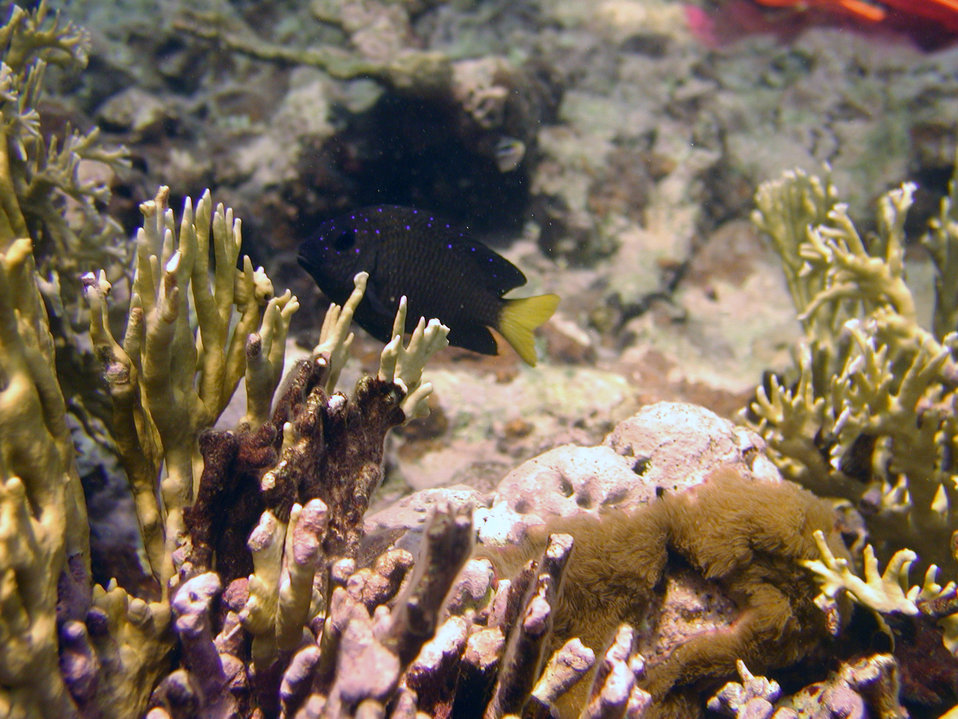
Yellowtail damselfish (Microspathodon chrysurus)